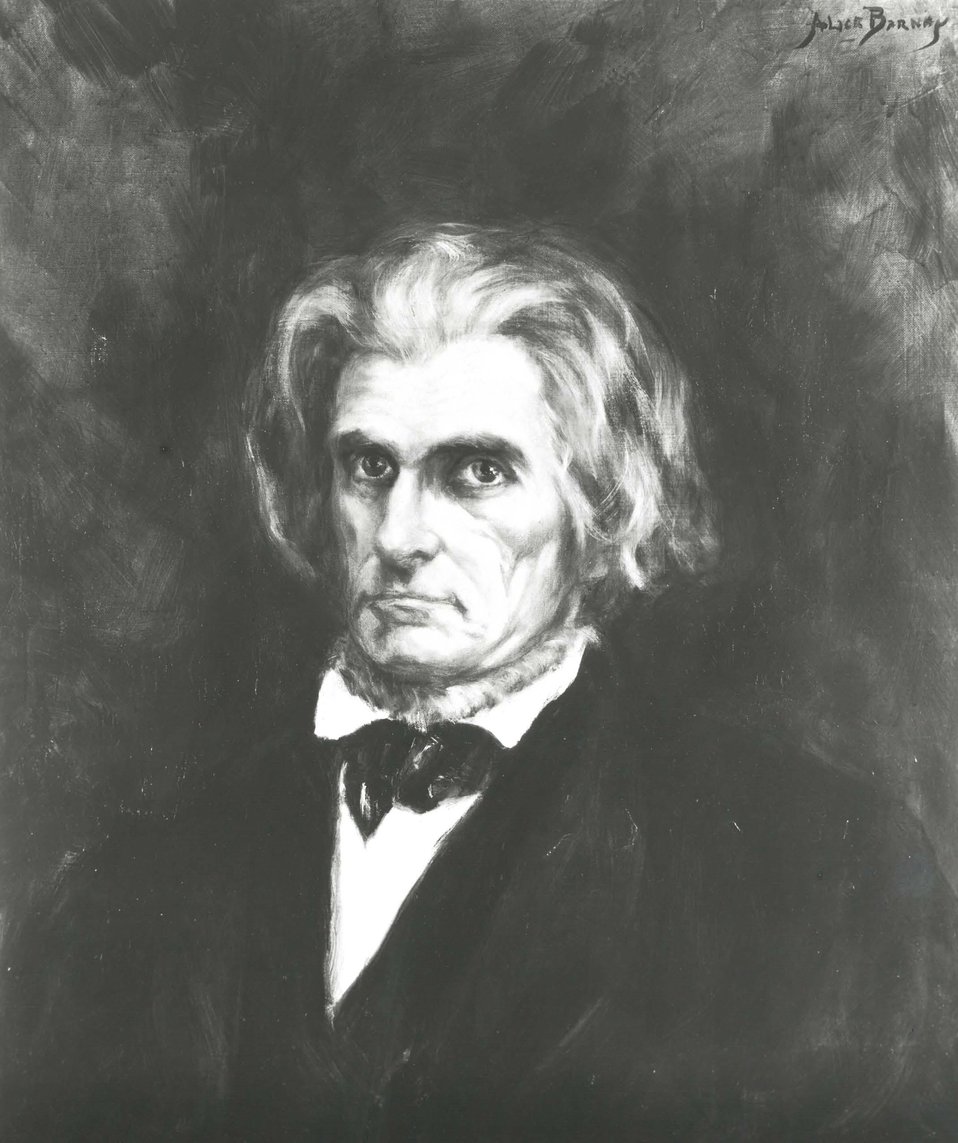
John C. Calhoun, U.S. Secretary of State, April 1, 1844 to March 10, 1845